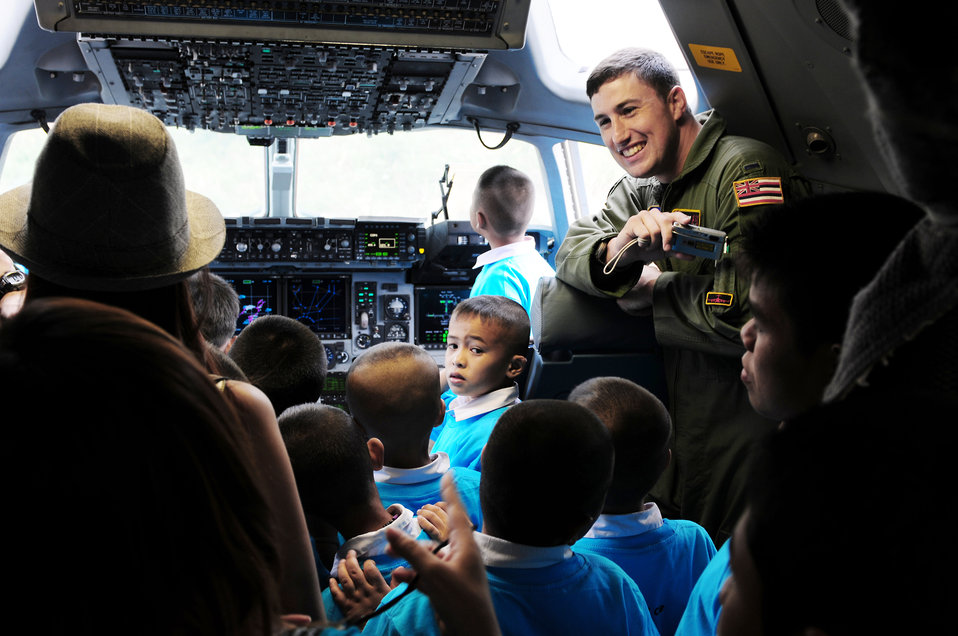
Cope Tiger 2010 open house

First Lt. Christopher Poponi gives local Thai students the opportunity to sit in the cockpit of a C-17 Globemaster III during the Cope Tiger 2010 open house held March 10 at Udon Thani Royal Thai Air Force Base, Thailand. Lieutenant Poponi is a pilot from the 204th Airlift Squadron at Joint Base Pearl Harbor-Hickam, Hawaii.